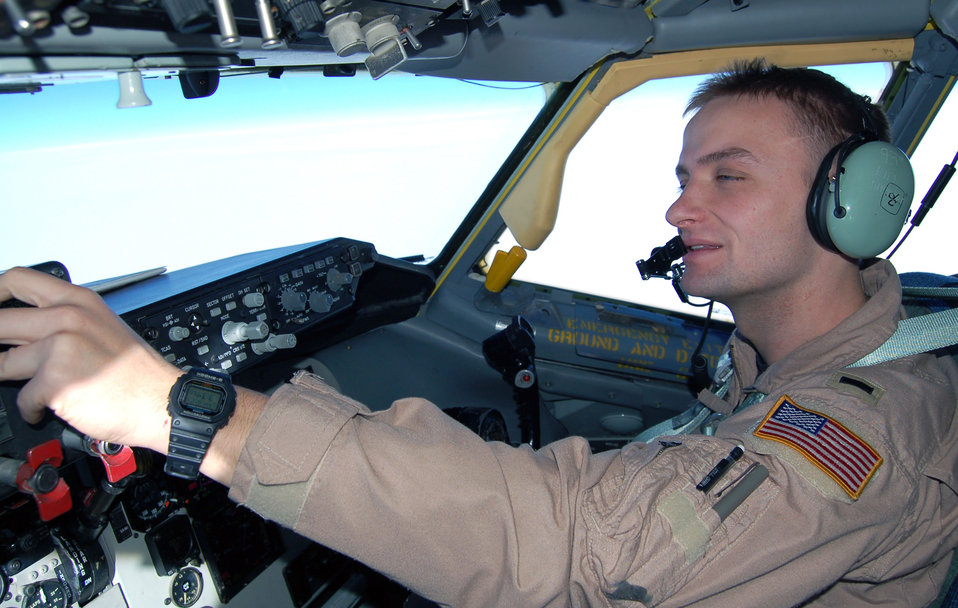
Reufelers keep mission going Christmas Day over Afghanistan

1st Lt. Tyler West, flying a KC-135 Stratotanker, makes in-flight adjustments during an aerial refueling mission Christmas Day.